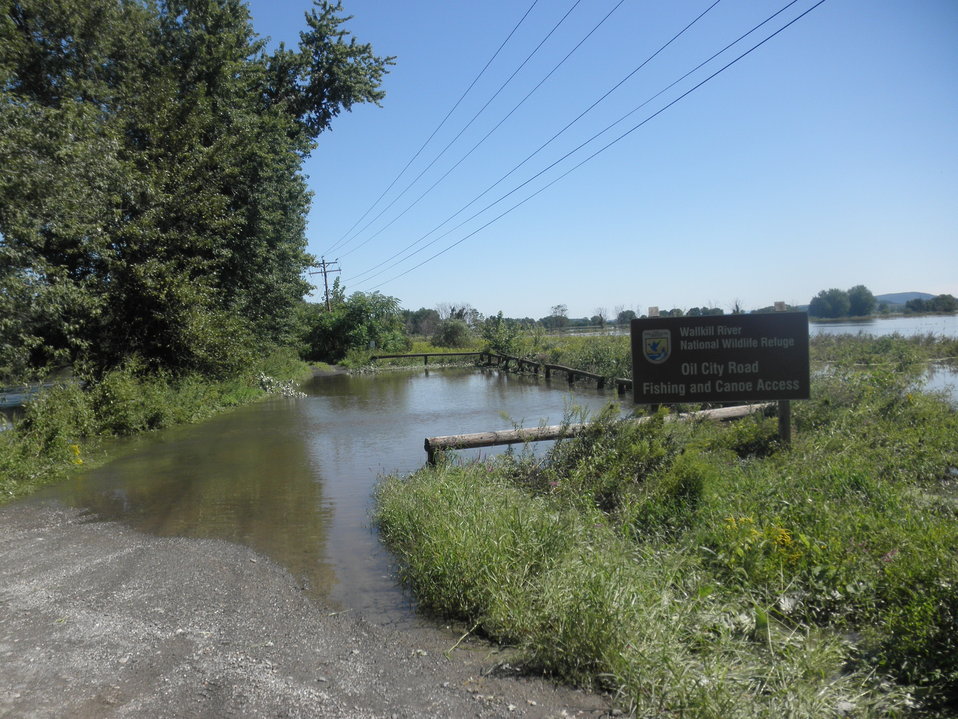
Hurricane Damage at Wallkill River National Wildlife Refuge August 30, 2011

Flooding at Oil City Road Parking Area, Sussex, NJ.